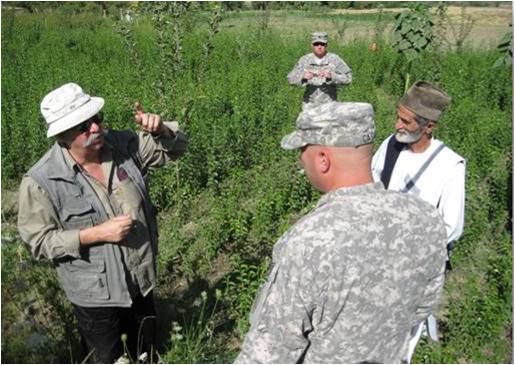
Agri- Business Underway